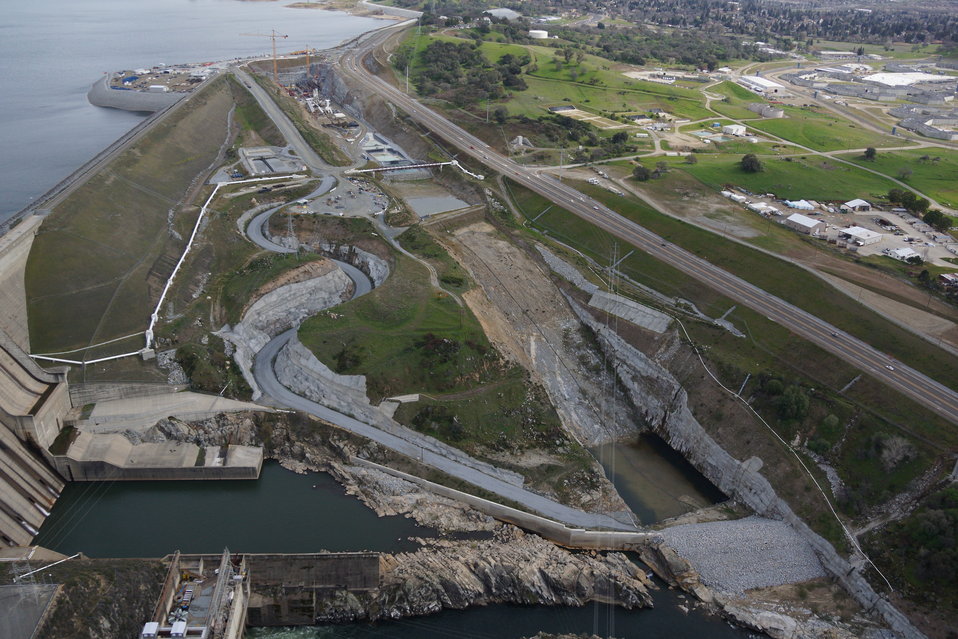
Aerial View of Folsom Dam Auxiliary Spillway

An aerial view shows the entire construction site of the Folsom Dam auxiliary spillway March 6, 2013. Excavation began in 2011 to remove 3.5 million cubic yards of rock and soil from the site. In 2012, the first steel and concrete were placed for the control structure—essentially a second dam—that will stand as tall as the Statue of Liberty when completed. The completed dam and chute will include 350,000 cubic yards of concrete, enough to line up concrete trucks from Sacramento to Los Angeles, and 24 million tons of steel, enough to build two Eiffel Towers. The project is estimated to be completed by October 2017 and is one piece of a larger plan to help the Sacramento region reduce the risk of flooding to a one-in-200 chance for flooding in any given year.